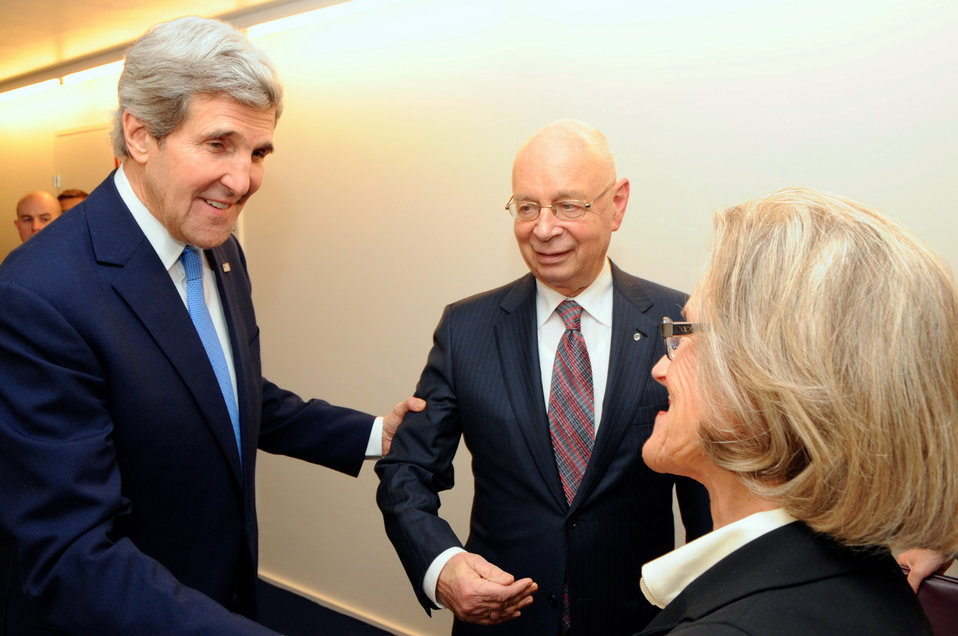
Secretary Kerry is Greeted by Klaus and Hilde Schaub at 2014 World Economic Forum

U.S. Secretary of State John Kerry is greeted by Klaus and Hilde Schaub, the co-hosts of the World Economic Forum, before delivering the keynote address at the annual gathering in Davos, Switzerland, on January 24, 2014.